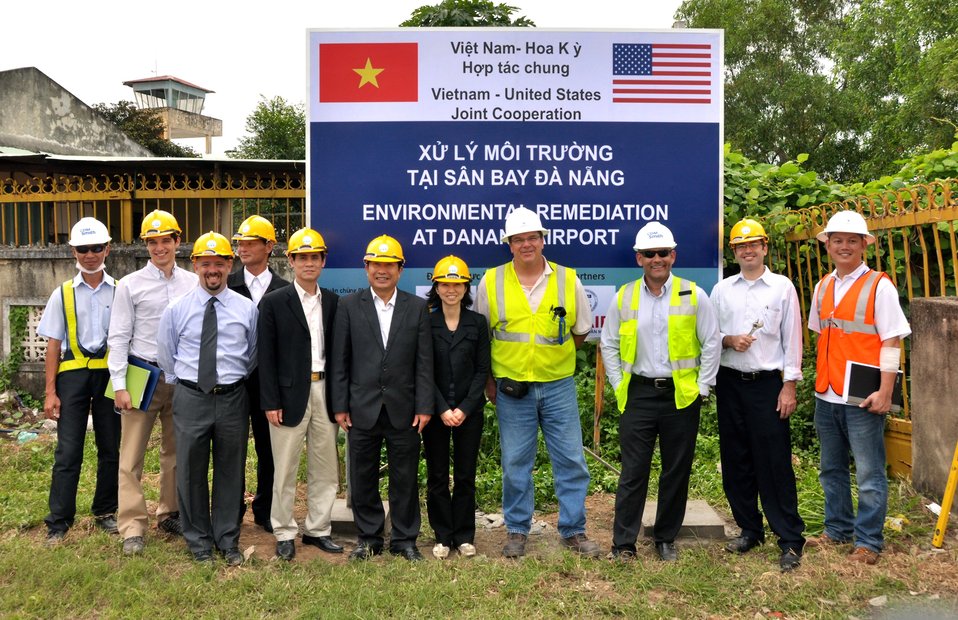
Site Preparation for Environmental Remediation of Dioxin Contamination at Danang Airport

Danang Airport, January 22, 2013